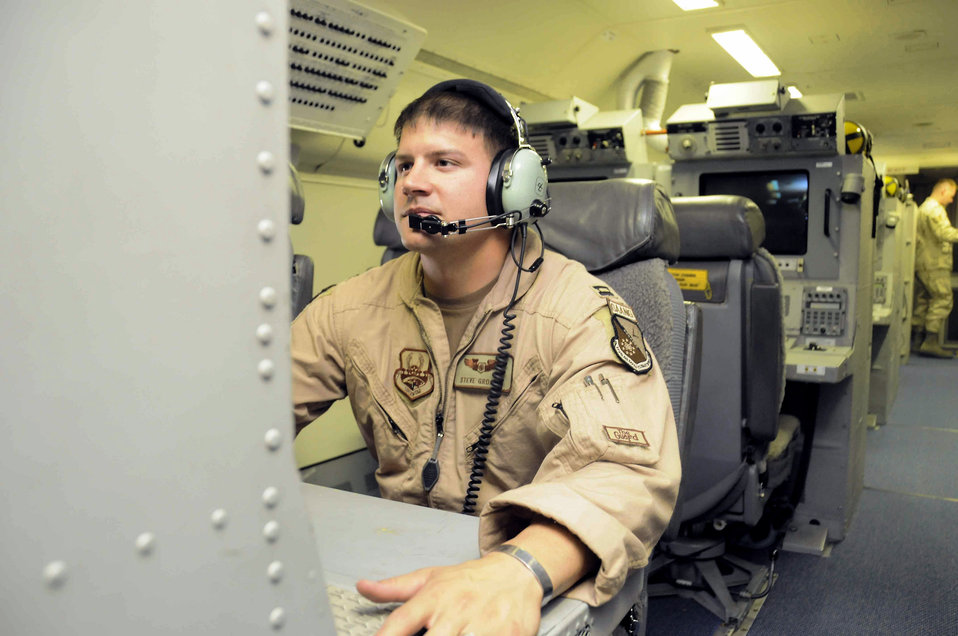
J-STARS total force cooperation helps save lives

Capt. Steve Grogan controls an operator workstation inside a Joint STARS aircraft May 19. Captain Grogan is the 7th Expeditionary Airborne Command and Control Squadron senior director.